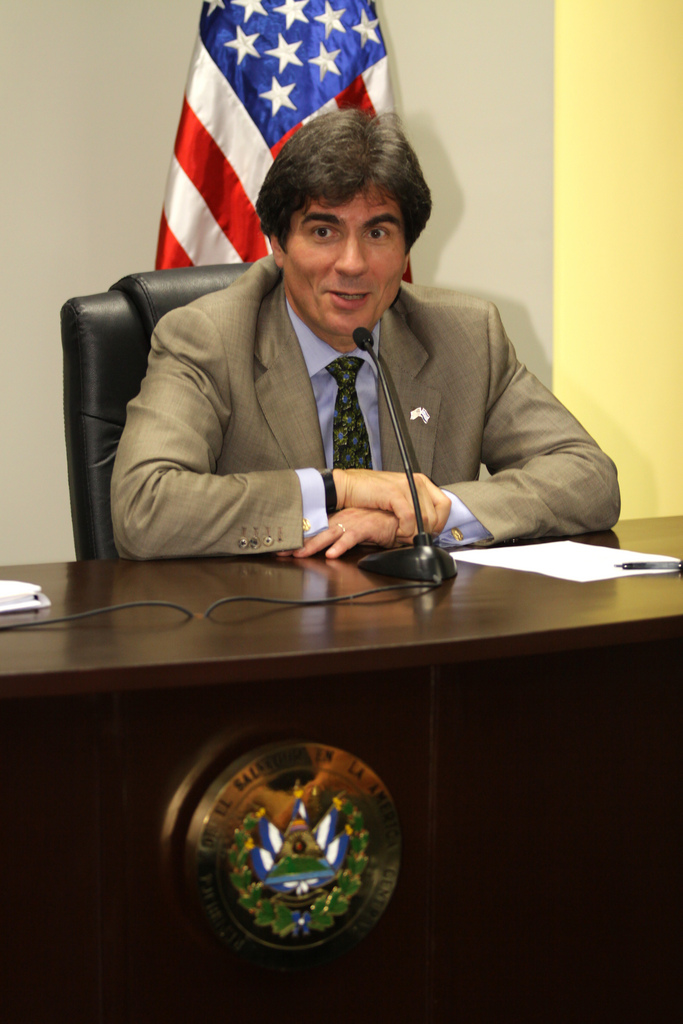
Assistant Secretary Fernandez Speaks With Reporters

Assistant Secretary of State for Economic, Energy and Business Affairs Jose Fernandez speaks with reporters at a press conference following the Partnership for Growth signing ceremony at the Presidential Palace in San Salvador, El Salvador, on November 3, 2011.